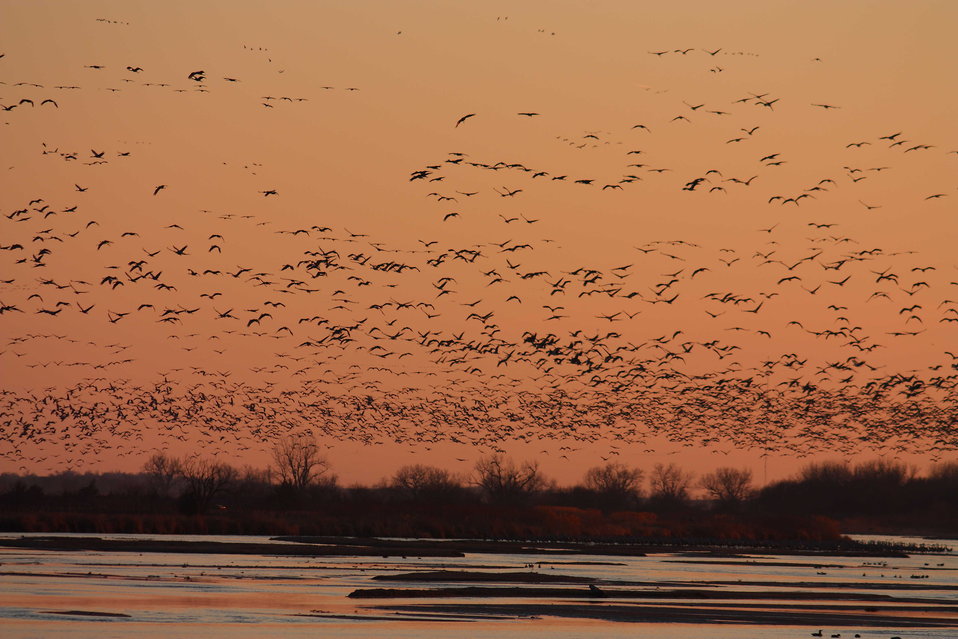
Sandhill cranes on the central Platte river in Nebraska.